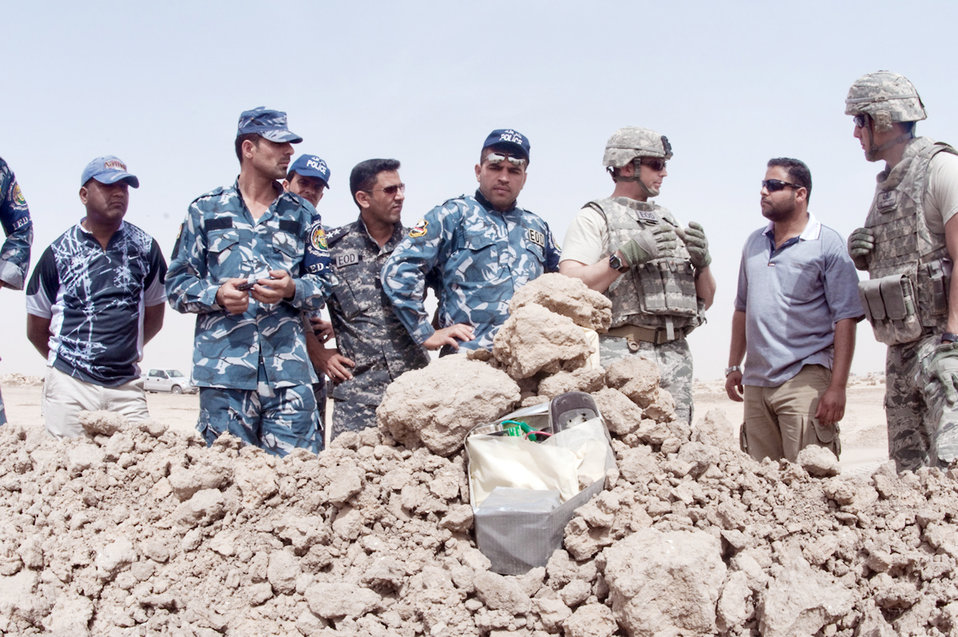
Airmen train Iraqi EOD squad

Tech Sgt. William Adomeit explains the procedures on how to disable an improvised explosive device to members of the Dhi Qar Province explosive ordnance police team March 11, 2010, at Ali Base, Iraq. Sergeant Adomeit is a 407th Explosive Ordnance Disposal team member deployed from Luke AFB, Ariz.